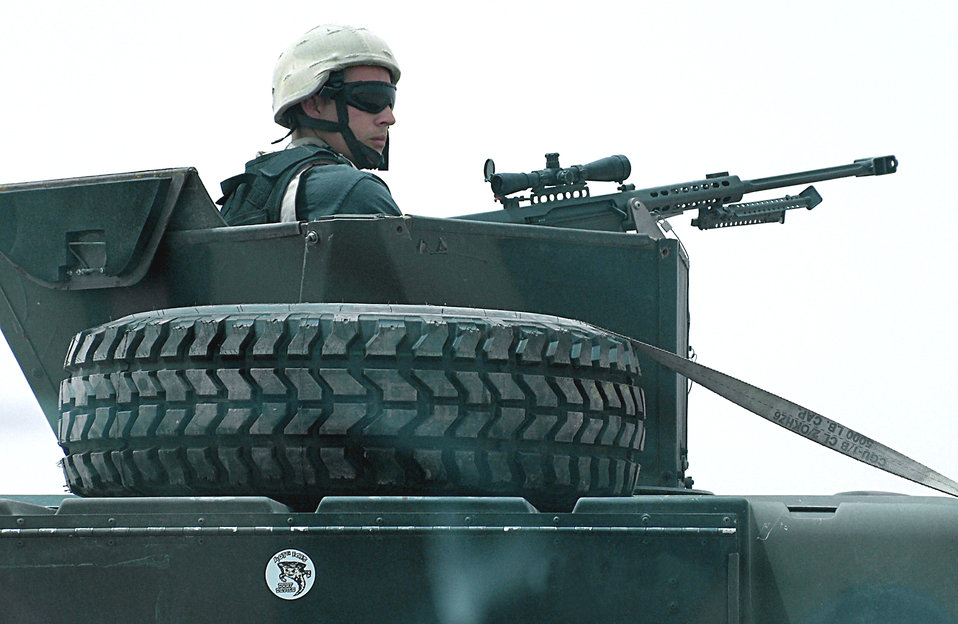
Got you covered

TALLIL AIR BASE, Iraq -- Staff Sgt. Joseph Biberston protects a convoy of contracting personnel returning here from Kuwait City on May 14. Sergeant Biberston is assigned to the 407th Expeditionary Civil Engineer Squadron.